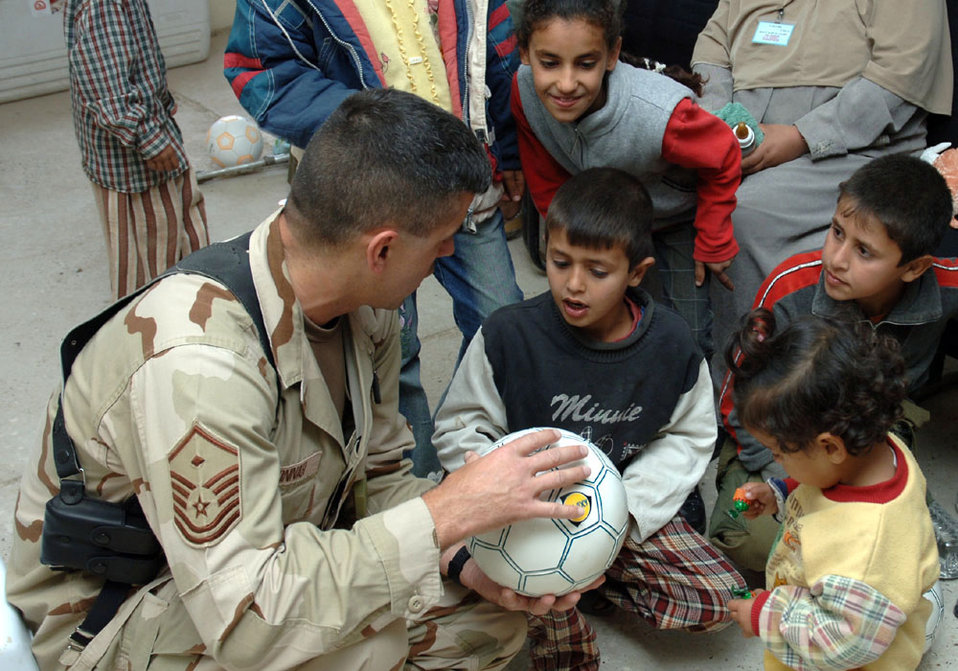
Baghdad clinic

BAGHDAD, Iraq (AFPN) -- Master Sgt. Scott Bonner discusses soccer with a young Iraqi boy before giving him a soccer ball. Sergeant Scott is the 447th first sergeant.